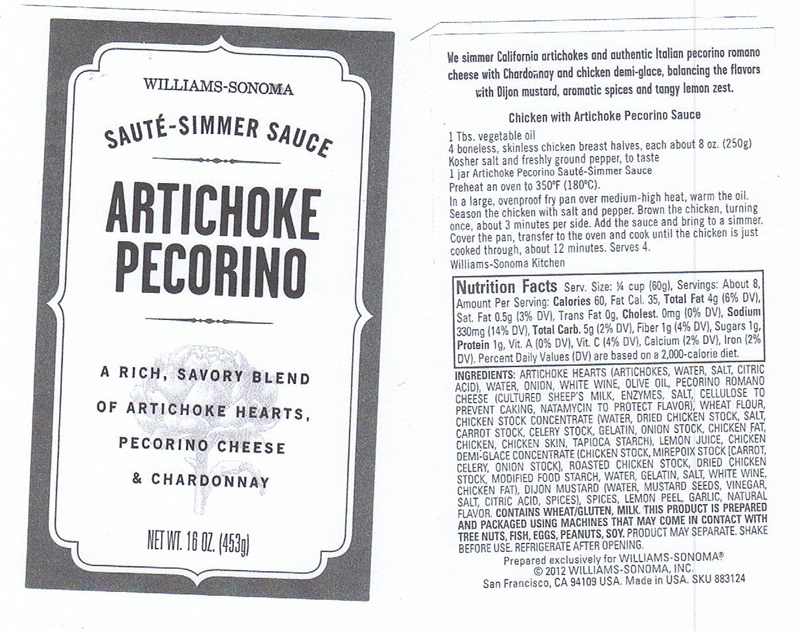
Artichoke Pecorino Sauce

August 28, 2013 – Premier Foods, LLC Announces The Recall Of Products Sold At Williams-Sonoma For Undeclared Allergens.